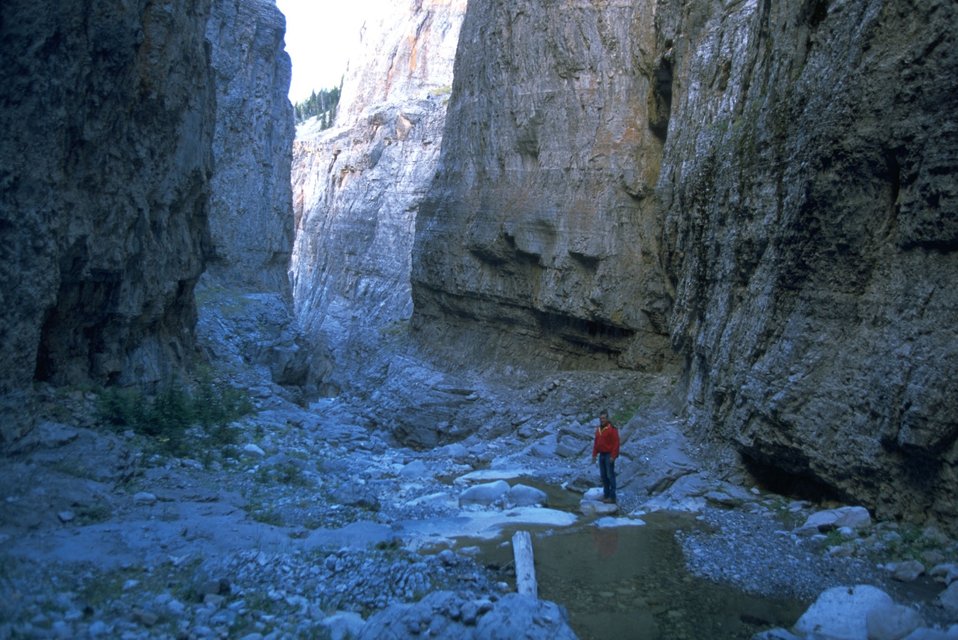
Looking east at Muddy Creek in the Rocky Mountain Front